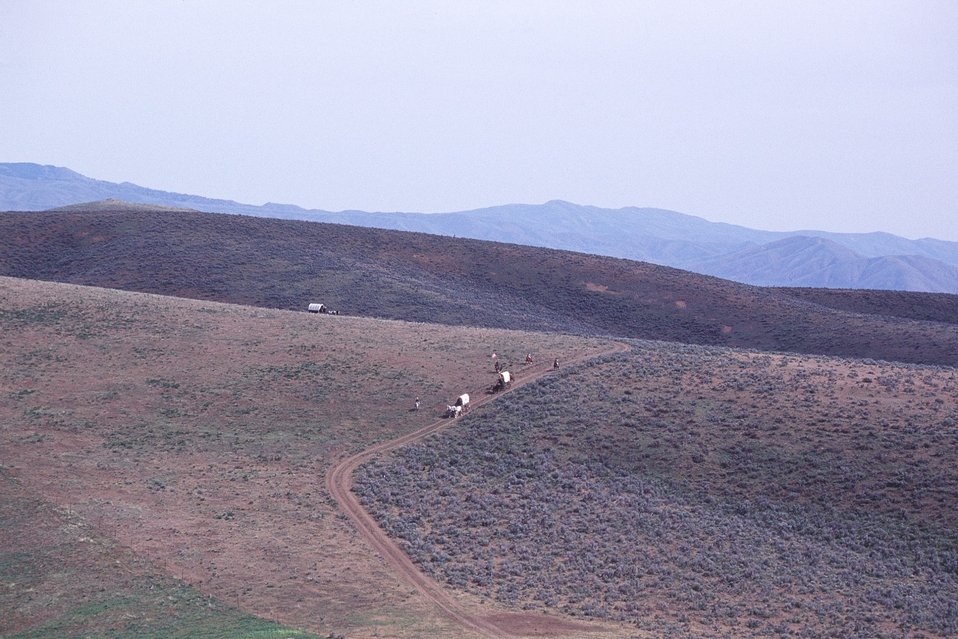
NHOTIC 10th Anniversary, wagon train reenactment. Far shot of covered wagons.